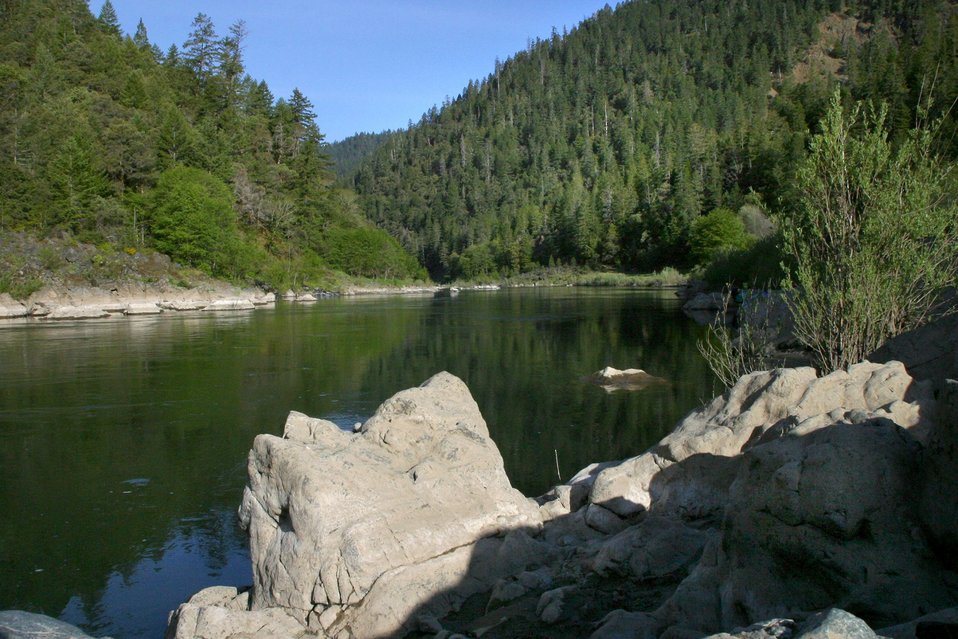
Wild section of the Rogue River from Grave Creek to Foster Bar May 19 to May 22.